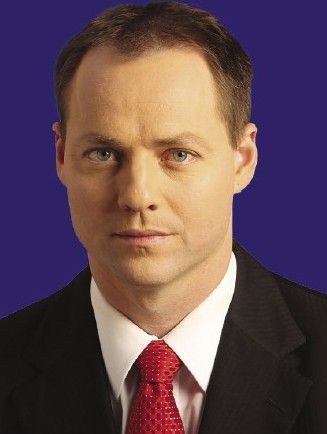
Yohanan Plesner